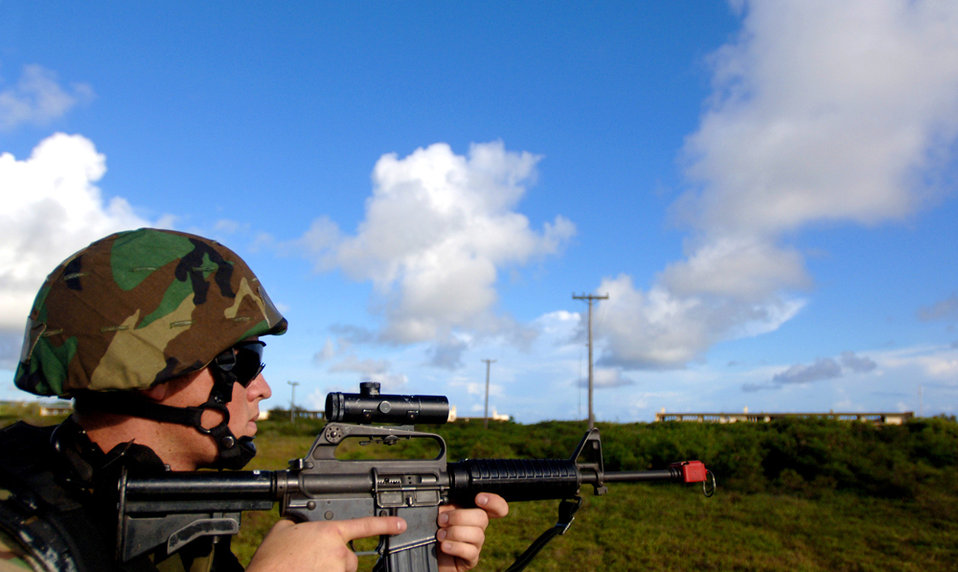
Preparing for the real thing

ANDERSEN AIR FORCE BASE, Guam -- Airman 1st Class Ted Hestilow watches out for